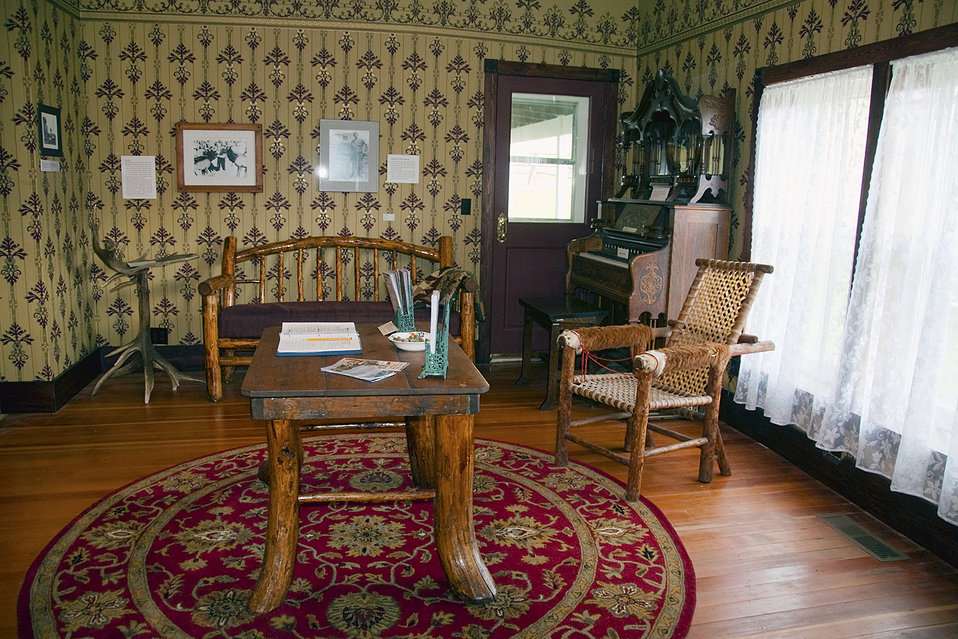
Traditionally-Furnished Room in the Historic Miller House

Displays in the Miller House focus on homesteading and the establishment of the National Elk Refuge in Wyoming.